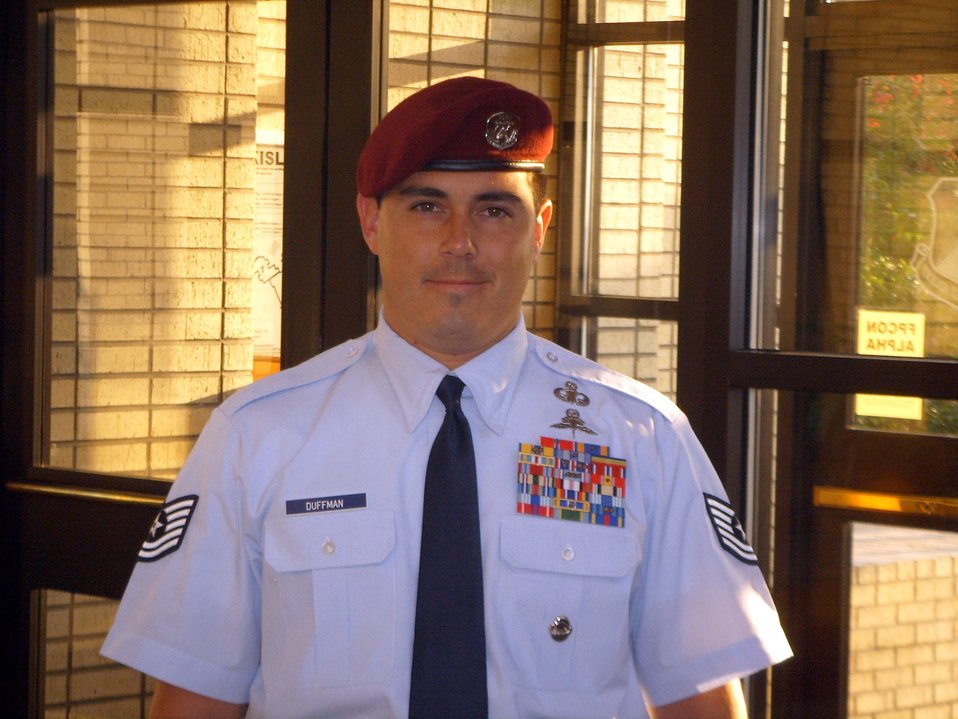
Pope Airmen to honor fallen member

Tech. Sgt. Scott E. Duffman, 32, of Albuquerque, N.M., was among those killed in an MH-47 special operations helicopter crash Feb. 18 in Afghanistan.